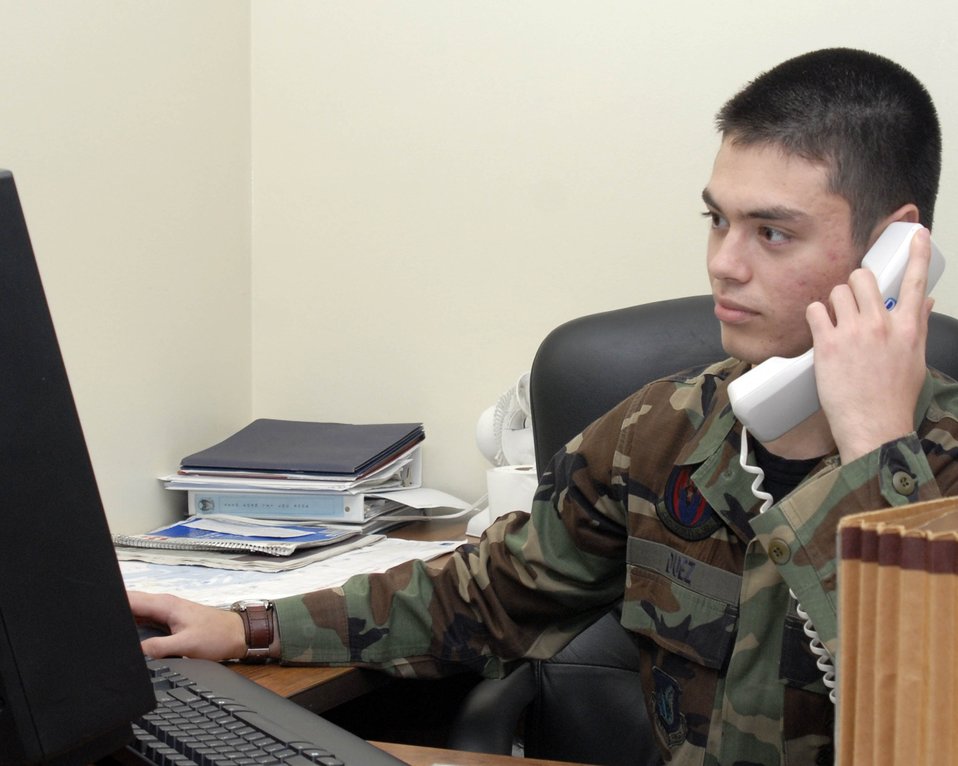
Serving through the season: Airman Van Dexter Duez

Airman Van Dexter Duez coordinates the weekly flying schedule Dec. 13 at Kadena Air Base, Japan. Airman Duez manages the weekly flying and maintenance schedule for the 44th Aircraft Maintenance Unit.